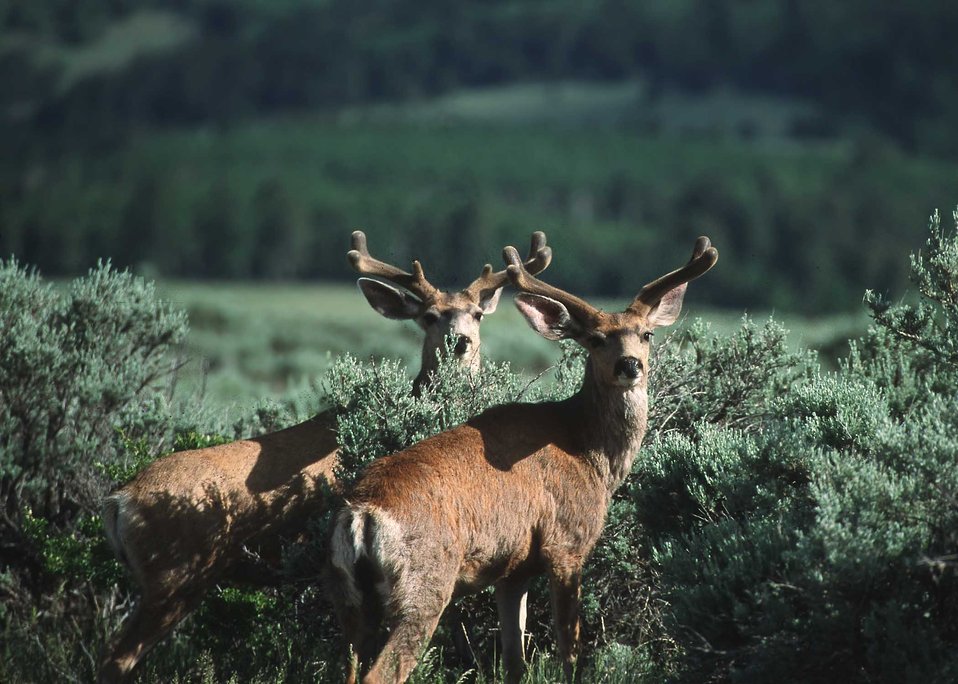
A pair of mule deer in velvet on FT Ranch.